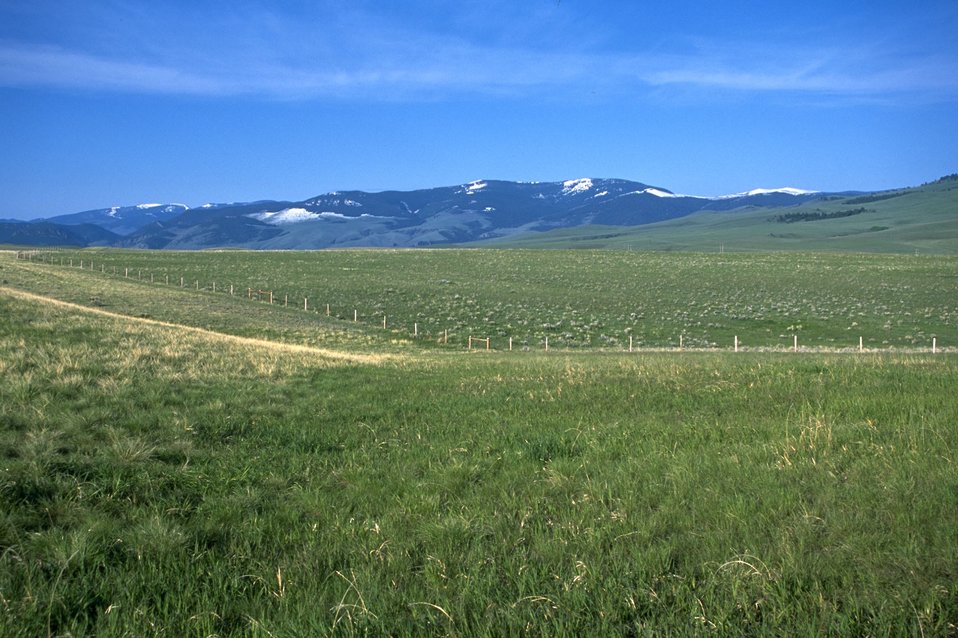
Grassy meadows looking up to snow-topped mountains